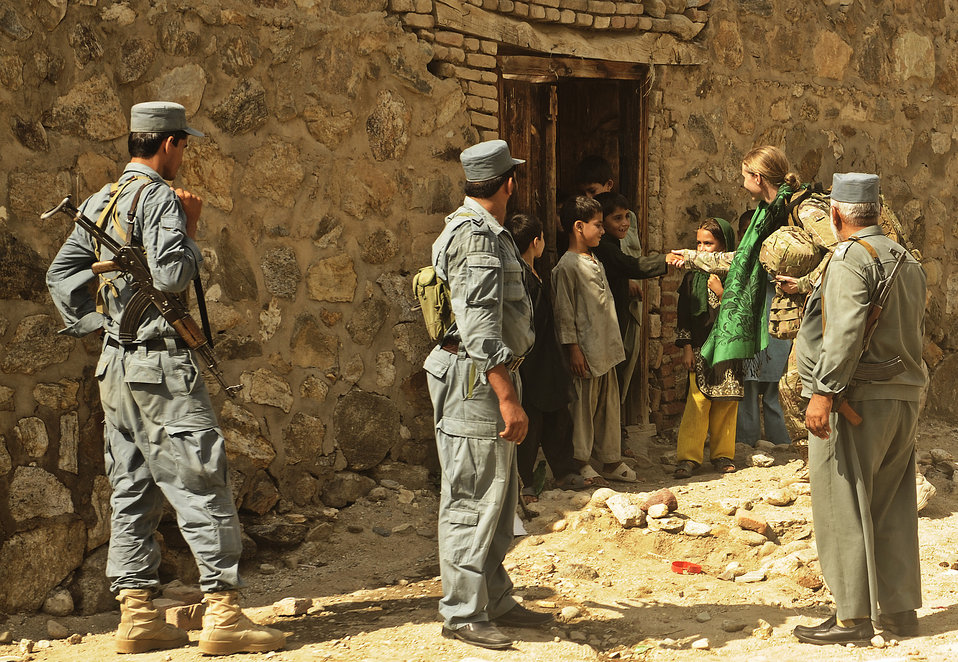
Greetings in Afghanistan

Senior Airman Lauren Everett greets a group of children Sept. 12, 2011, in the Laghman province of Afghanistan. The Laghman Provincal Reconstruction Team members partnered with the security forces assistant team and the Afghan National Police on a patrol through a village. Everett is a medic with the Laghman PRT.